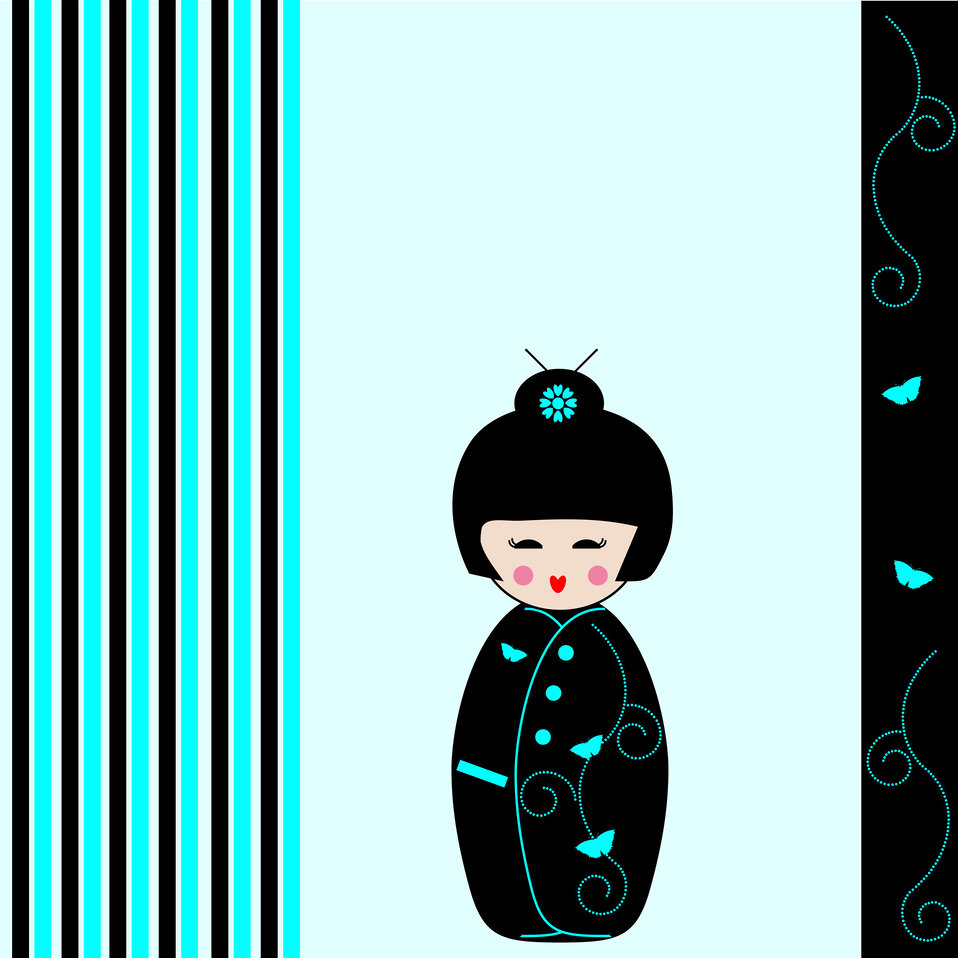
Kokeshi doll card

Cute japanese kokeshi doll card for scrapbooking.